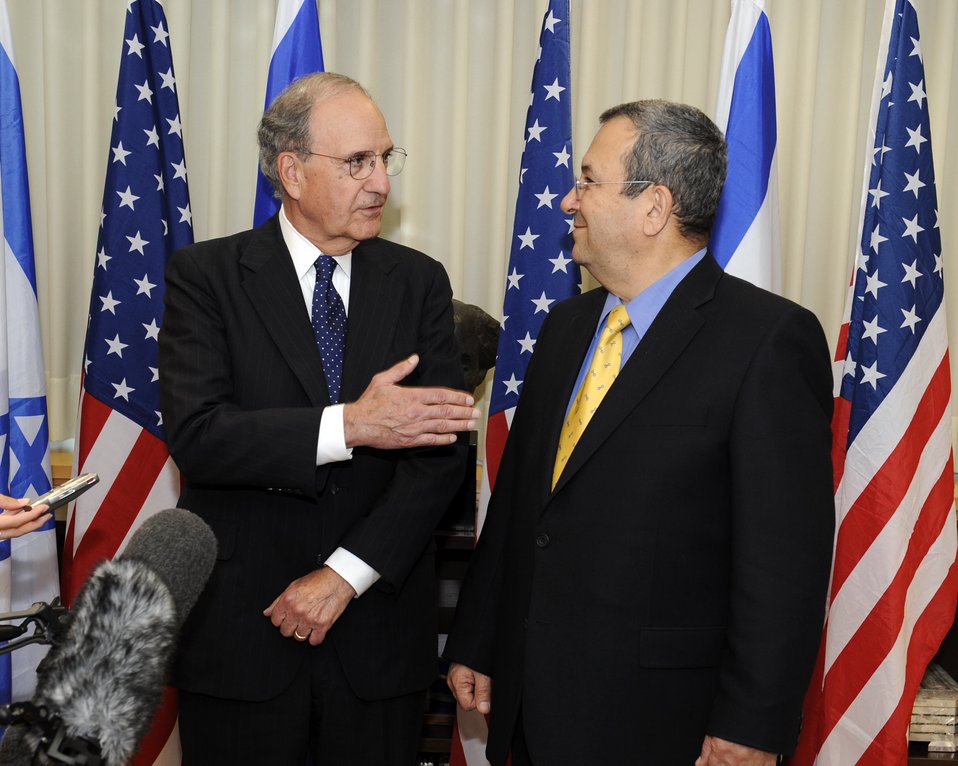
U.S. Special Envoy George Mitchell Meets With Israeli Defense Minister

U.S. Special Envoy George Mitchell with Israeli Minister of Defense Ehud Barak before their meeting in Tel Aviv, Israel July 26, 2009.